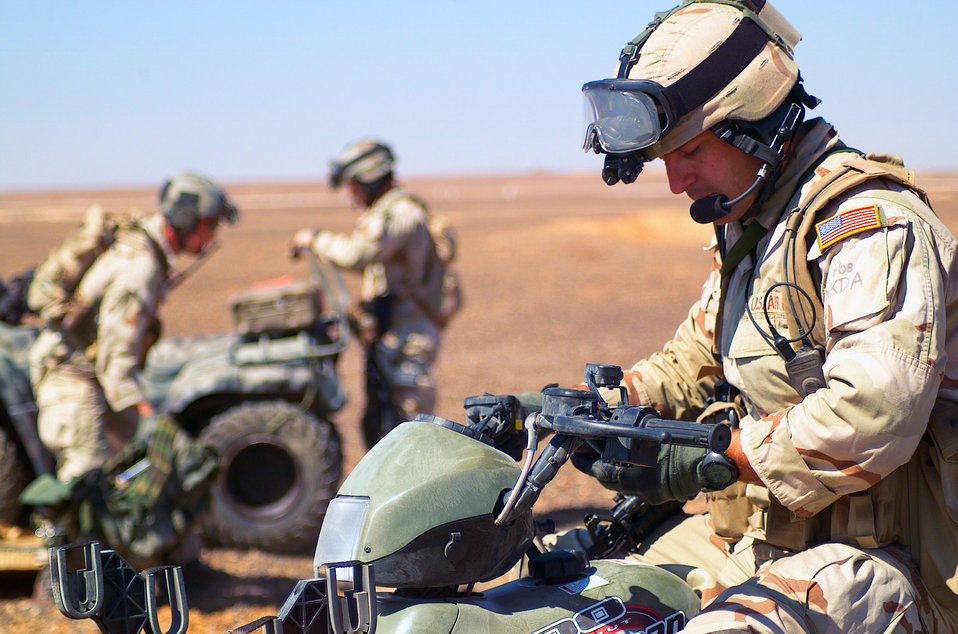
All terrain troops

SOUTHWEST ASIA -- Pararescuemen from the 410th Air Expeditionary Wing prepare their all-terrain vehicles after a practice jump from a C-130 Hercules recently at a forward deployed location in the Arabian Gulf region.